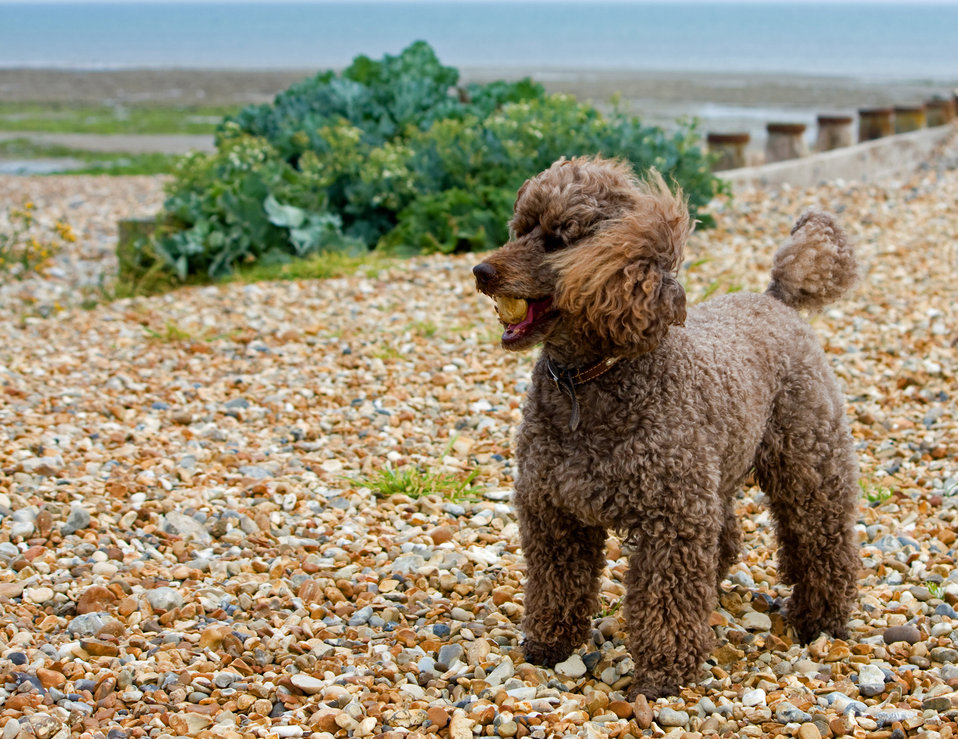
Miniature poodle dog

Cute little miniature poodle dog at the beach standing on the pebbles with a stone in his mouth.